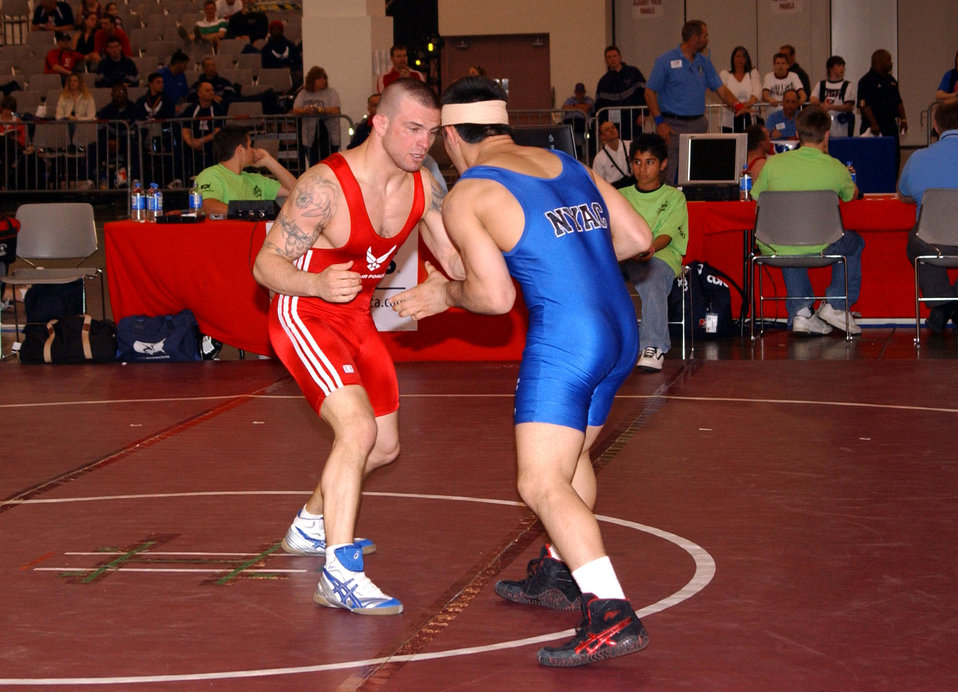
Airmen earn silver, bronze in wrestling championship

Jacob Hey (left) matches up against Marco Lara in a Greco-Roman style match April 7 at the Las Vegas Convention Center. Hey, a staff sergeant from Scott Air Force Base, Ill. earned the silver in freestyle wrestling and the bronze in Greco-Roman at the Armed Forces tournament.